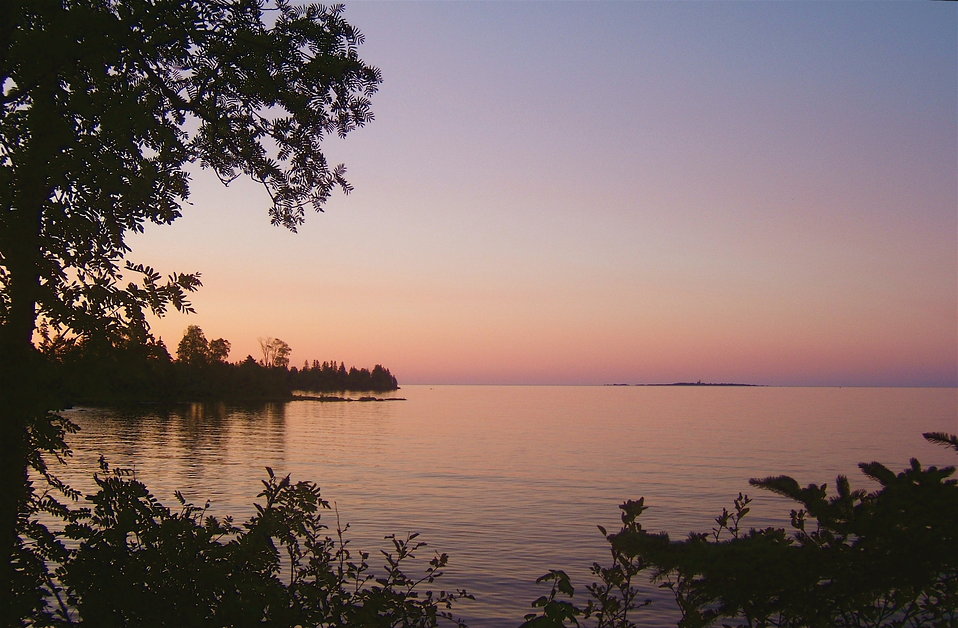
Upper Midwest and Great Lakes LCC

Sunrise at Siskwit Bay